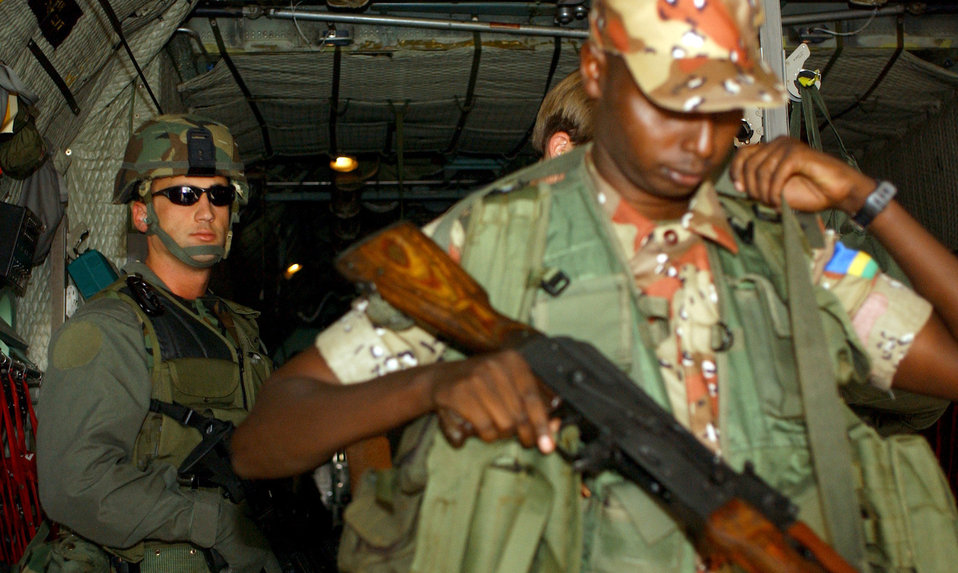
Watch

EL FASHER, Sudan -- Staff Sgt. James Howard watches over Rwandan troops as they depart the aircraft. The United States is providing transportation for 1,200 Rwandan forces to Sudan in support of the African Union Mission. Sergeant Howard is with the 86th Air Expeditionary Group.